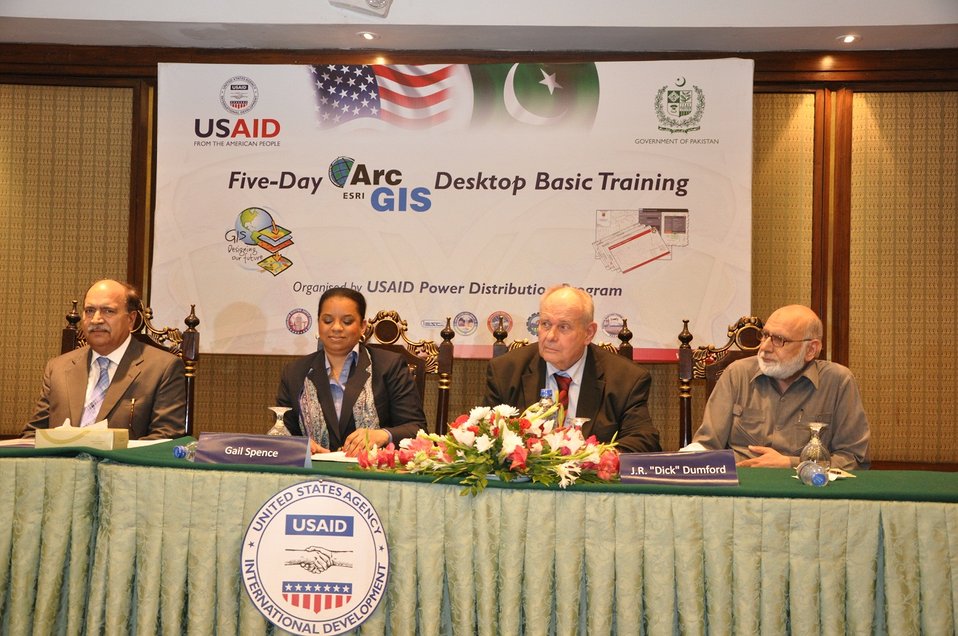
Planning and Engineering Workshop at Lahore

Lahore, July 20, 2012: The United States is strengthening Pakistan’s energy sector and helping to end energy shortages. In this effort, Acting Director USAID Punjab Gail Spence distributed certificates to mangers from nine power sector distribution companies (DISCOs) who completed a U.S.-funded five-day Planning and Engineering training program. The training aims to modernize the Planning and Engineering (P&E) sectors of the DISCOs improving energy distribution across Pakistan. “I am confident that thanks to this training, Pakistan will now be better able to meet its power sector reform targets and reduce the energy crisis,” Ms. Spence remarked.

The USAID Power Distribution Program organized the training in close collaboration with the Lahore Electric Supply Company (LESCO). The four year USAID Power Distribution Program is a testament to the United States’ commitment to supporting Pakistan’s energy sector. Through the Power Distribution Program, USAID is helping DISCOs modernize equipment, receive expert consultations, and introduce international best practices to ensure a more reliable supply of power to consumers.